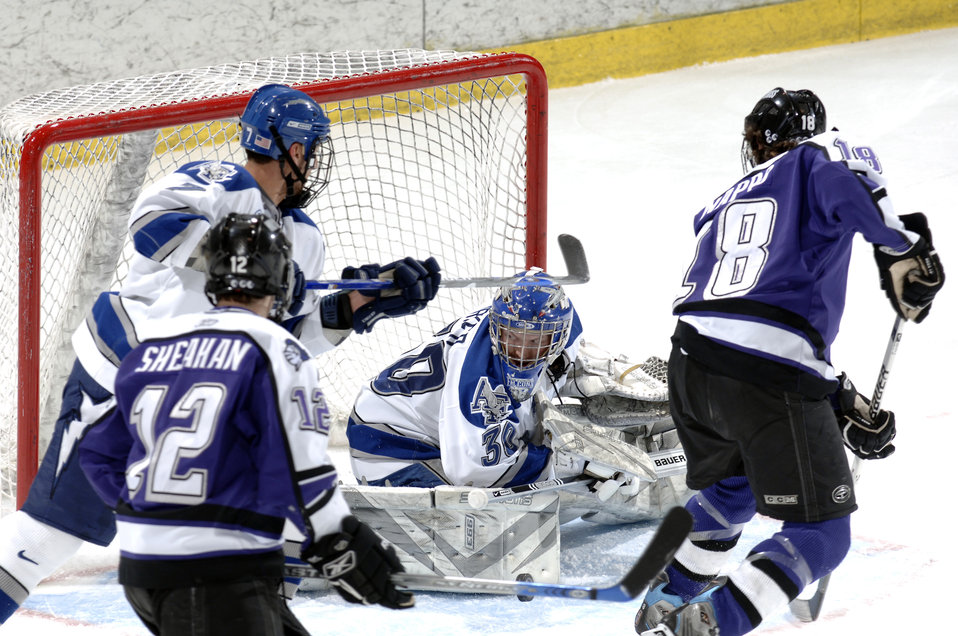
Air Force blanks Holy Cross, 3-0

Senior goalie Ben Worker recorded his third shutout of the season in leading Air Force to a 3-0 win over Holy Cross in the quarterfinals of the Atlantic Hockey Association Tournament. Worker stopped all 17 shots he faced.